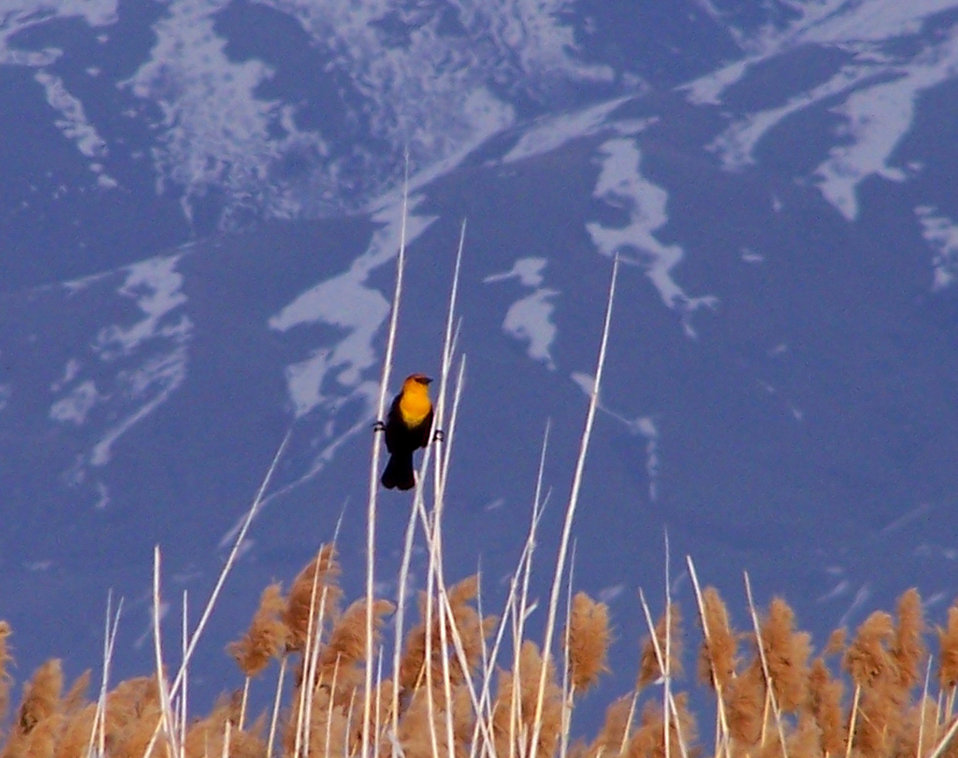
yellow-headed blackbird, Bear River Refuge

Bear River Migratory Bird Refuge, UT
Photo: Bryant Olsen, Creative Commons
Created in 1928, Bear River Refuge set aside bird habitat in the nation's interior, an early recognition of the importance of conserving non-coastal wetlands as wildlife oases.